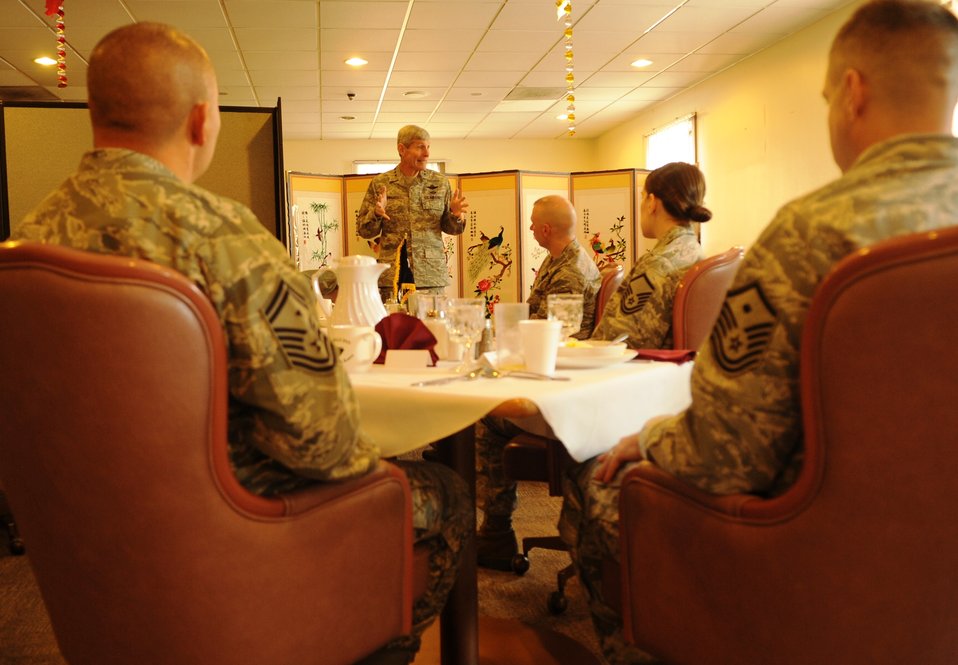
CSAF thanks Wolf Pack for commitment to service during holidays

Air Force Chief of Staff Gen. Norton Schwartz talks with 8th Fighter Wing first sergeants during breakfast Dec. 24, 2011, as part of his visit to Kunsan Air Base, South Korea. The general and his wife visited Kunsan AB during the holidays to spend time and spread holiday cheer to Airmen serving on a remote, one-year assignment on the Korean peninsula.